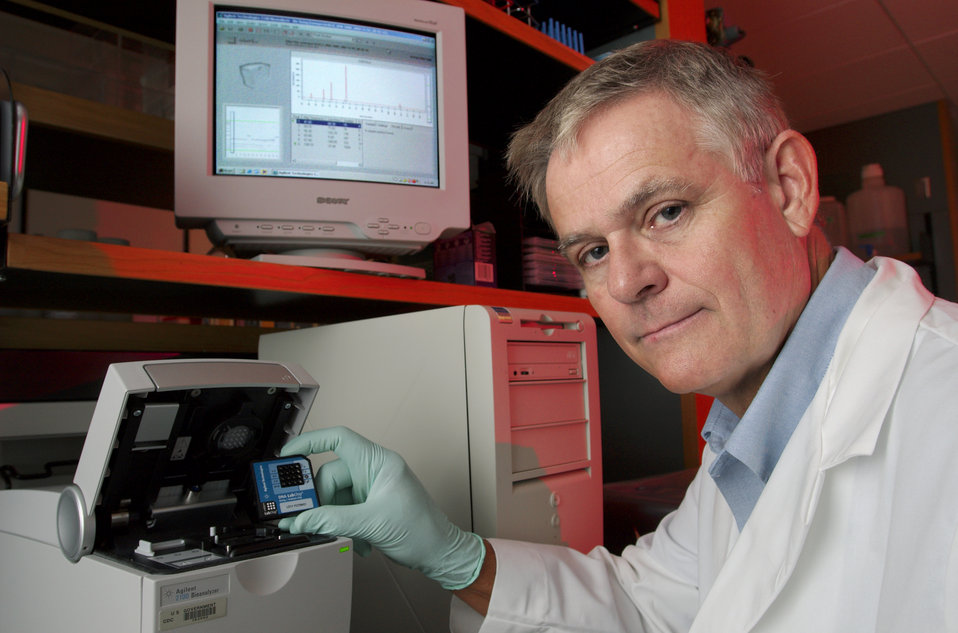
This was Dr. Robert Cooksey, who was shown holding a 'microfluidic' labchip, a device that is used in a machine known as a 'bioanalyzer', to evaluate, in this case, the relationships between Mycobacterium cosmeticum strains.There are some 115 species of Mycobacterium, the most notorious causing tuberculosis and leprosy. At least 20, including M. cosmeticum, have been associated with human infections, and using modern molecular technologies, many more novel pathogenic species will likely emerge. "With so many species, it's important from a medical, epidemiological, and public health standpoint to be able to recognize with what species and strains you are dealing," concludes Cooksey, who is only a few years away from retiring as principal investigator.